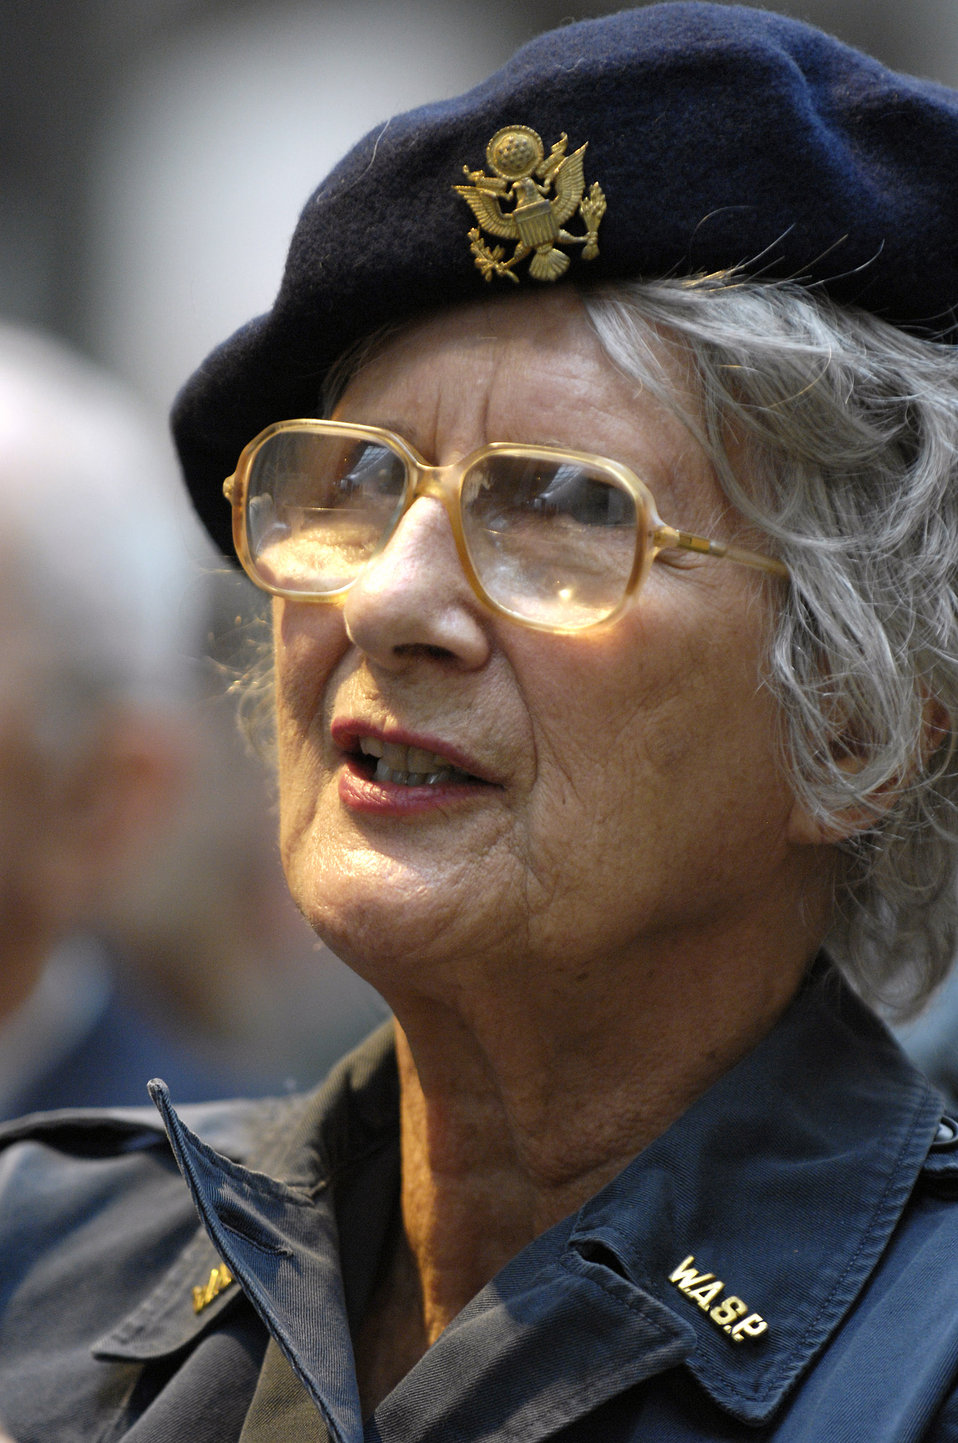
WASP exhibit opens in Arlington

Joan Lemley, a World War II Women Airforce Service Pilot, listens to a speaker while attending the